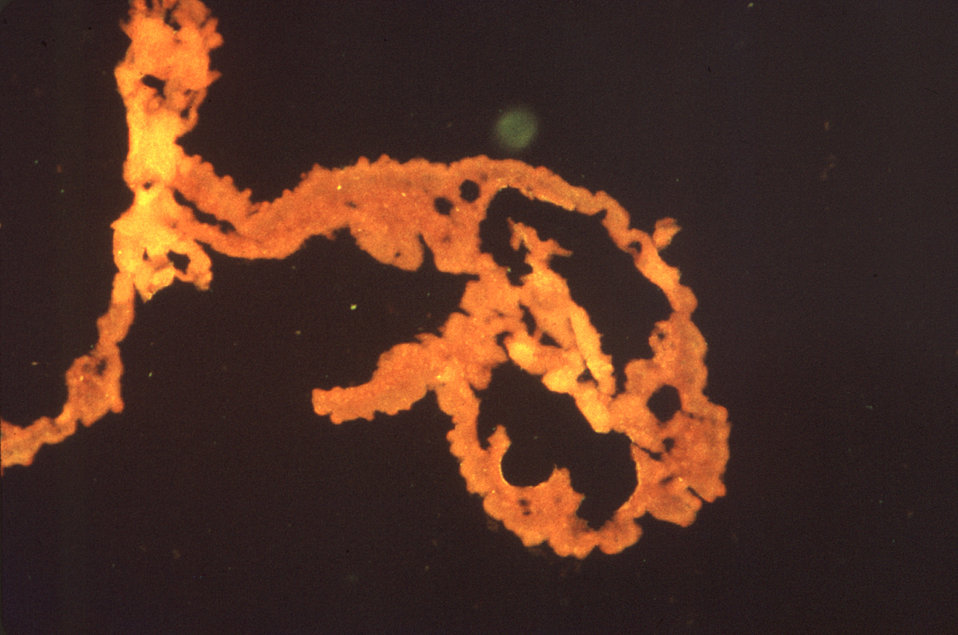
Under a low magnification of 78X, and stained using an indirect fluorescent antibody (IFA) test, this photomicrograph confirmed the presence of Schistosoma mansoni trematodes.